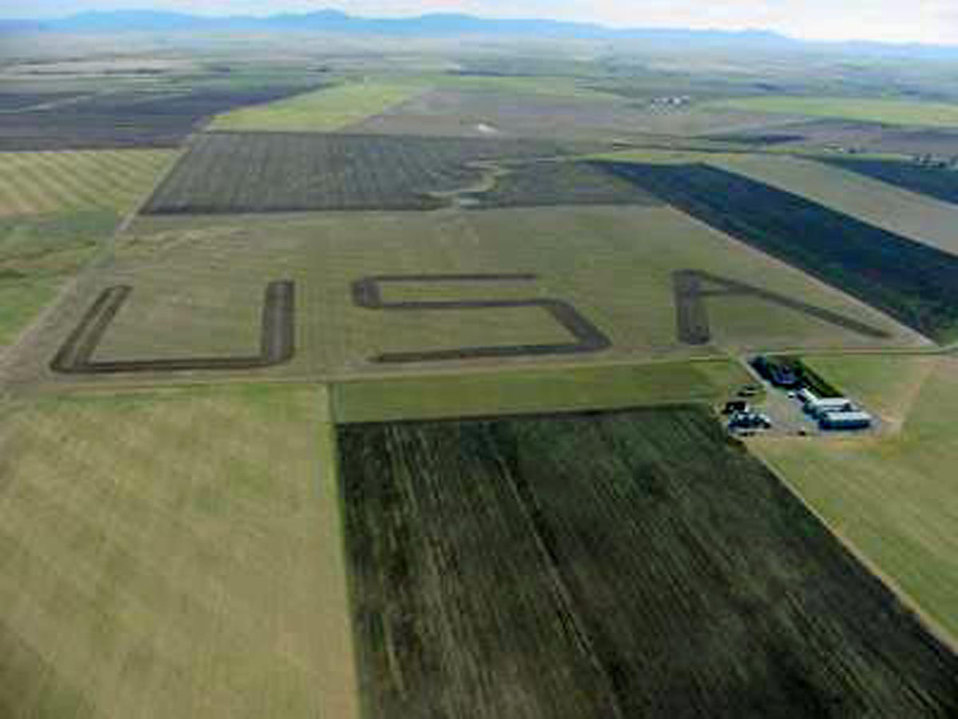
Pride in America

GREAT FALLS, Mont. -- Montana farmer Steve Raska pounded his ploughshares into an artist's brush Sept. 16, 2001 when he plowed 'USA' in letters 1,000 feet high. Steve and his wife, Lola, own the 2,500-acre farm 12 miles southeast of Great Falls, near Malmstrom AFB, Mont. They wanted 341st Space Wing's helicopter crews to know they supported them in their efforts to defend the nation.